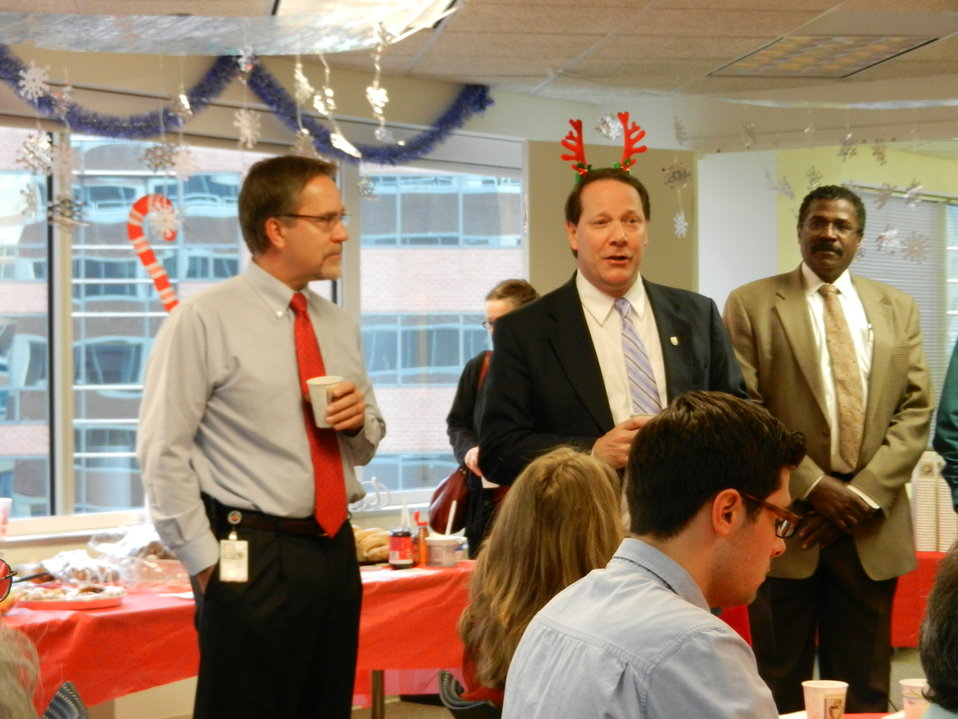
Greg Siekaniec, Jim Kurth and Hannibal Bolton